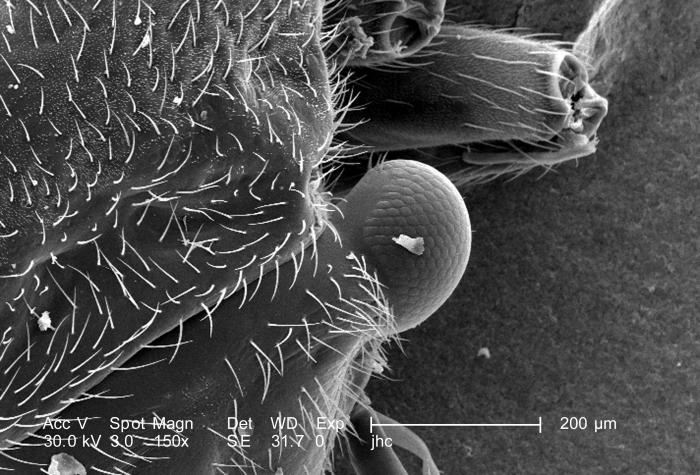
At half the magnification as that of PHIL 9902, magnified 150x, this scanning electron micrograph (SEM) depicted one of the two compound eyes of an unidentified 1/4"-sized black flying insect with a small red mark on its dorsum, found in the Decatur, Georgia suburbs.The compound eye is given this name due to the fact that the single large eye is really made up of many repeating units known as "ommatidia', each composed of separate units made up of a photoreceptor cell, support cell, and pigment cells. Though each of these visual mechanisms functions as a separate organ, together they provide the organism with a "compound' picture of its environment. Due to what is referred to as the "flicker effect', the compound eye is made very sensitive to movement, with each ommatidium turning on and off, as objects pass across its field of view. The bilateral anatomical placement of the insect's eyes provides the organism with a very wide range of visual sensitivity.